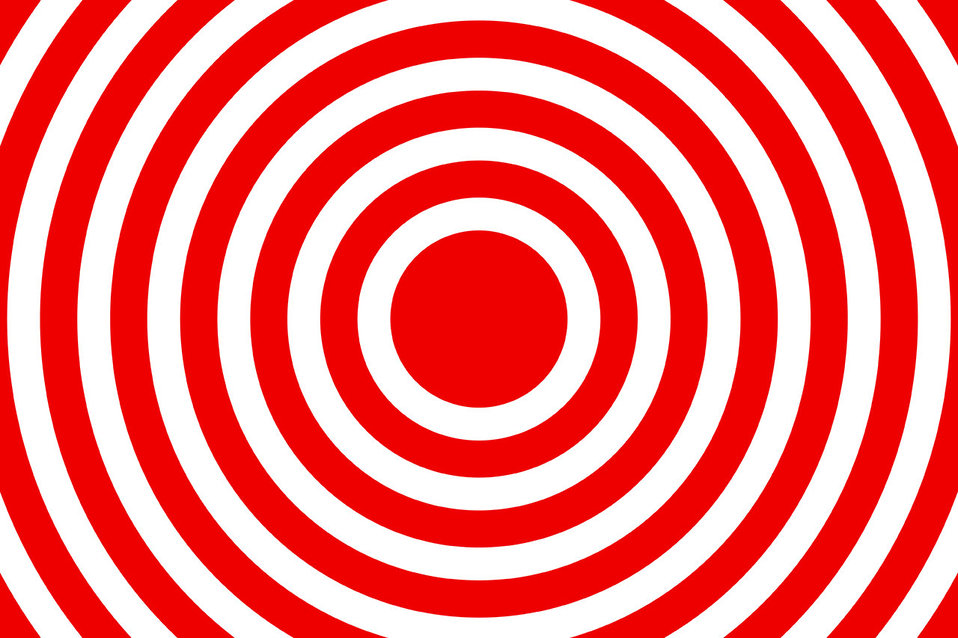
Red circles

A couple of red circles.